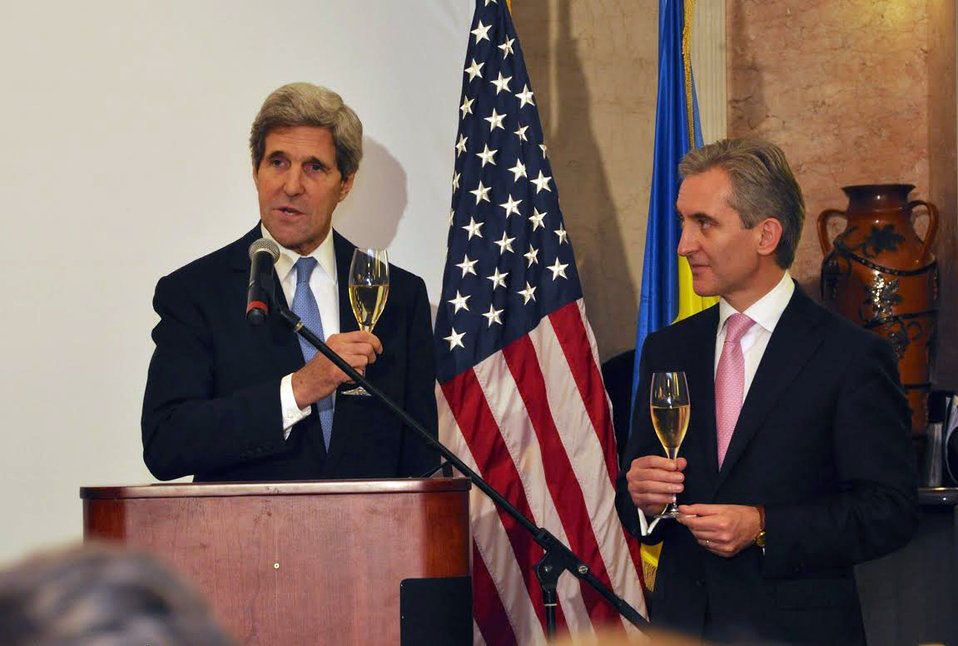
Secretary Kerry and Moldovan Prime Minister Leanca Toast the U.S.-Moldova Relationship

U.S. Secretary of State John Kerry and Moldovan Prime Minister Lurie Leanca toast to the U.S.-Moldova partnership and to 'a new spring of prosperity and opportunity' in Chisinau, Moldova, on December 4, 2013.